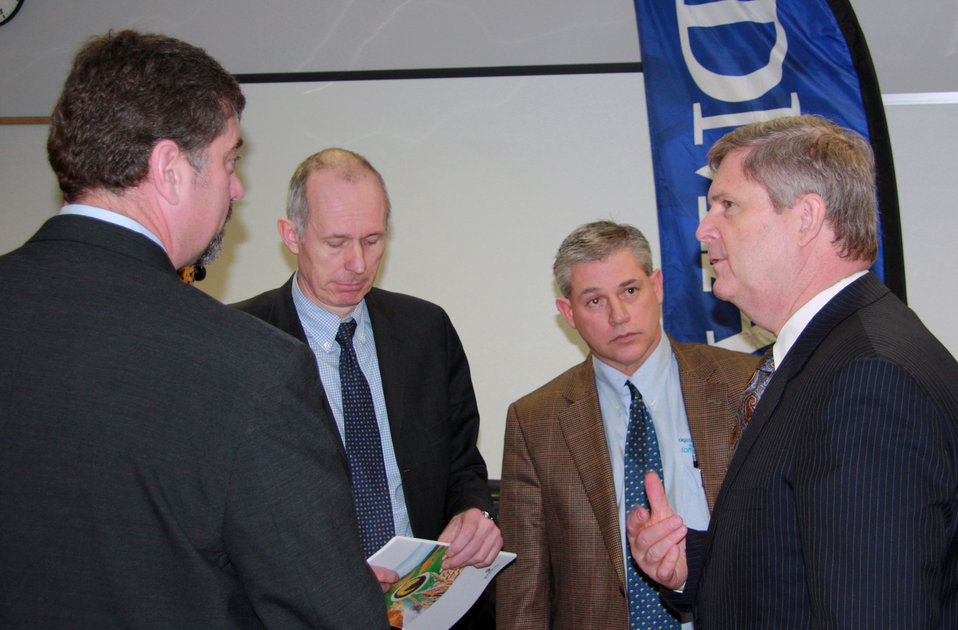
Agriculture Secretary Tom Vilsack hosted a roundtable with Iowa agriculture and business leaders as well as Des Moines Area Community College faculty and students to discuss President Obama’s efforts to strengthen the Iowa economy, on Friday, February 10, 2012 in Des Moines, IA.